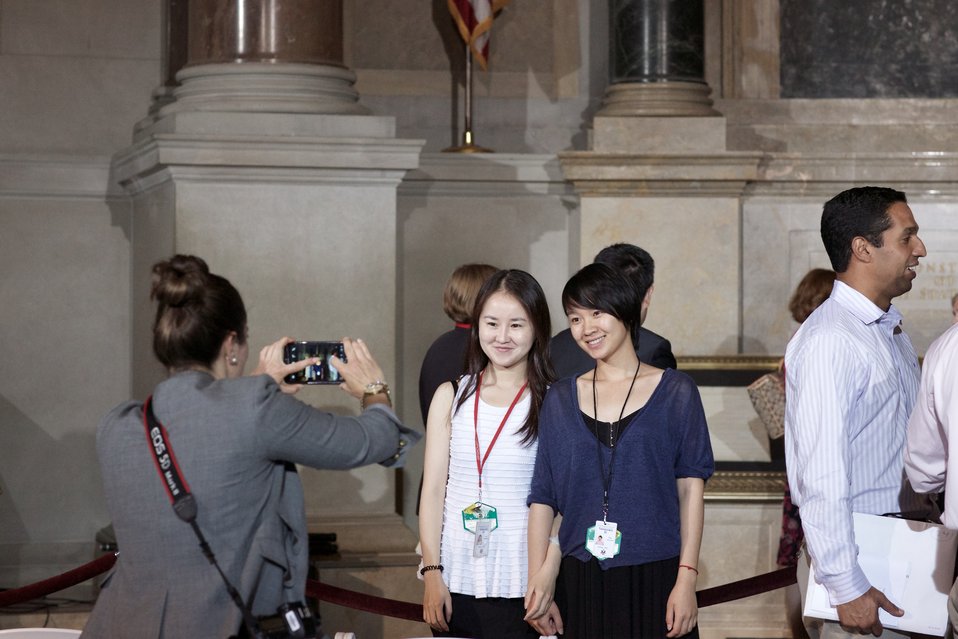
Naturalization Ceremony with Michelle Obama